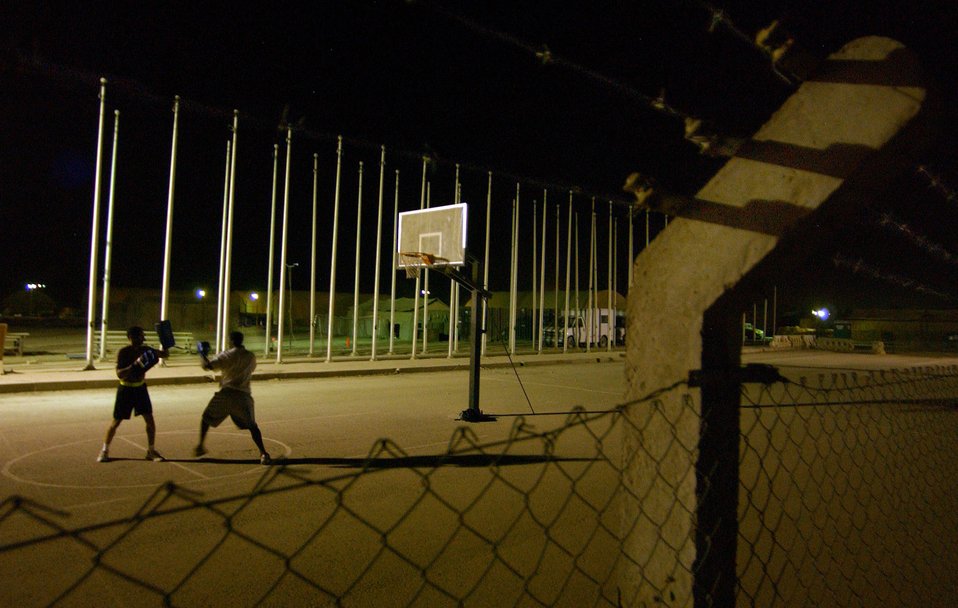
Battling time

BAGHDAD, Iraq -- Tech. Sgt. Lloyd Stafford, former Air Force welterweight boxing champion for 1995 and 1996, trains Senior Airman Nathan Simmons after their duty day. They keep fit here with a training regimen that includes cardiovascular, weight training and boxing. One of their training goals is to prepare Airman Simmons for an Army boxing competition at nearby Camp Victory. The Airmen are assigned to the 447th Expeditionary Aircraft Maintenance Squadron.